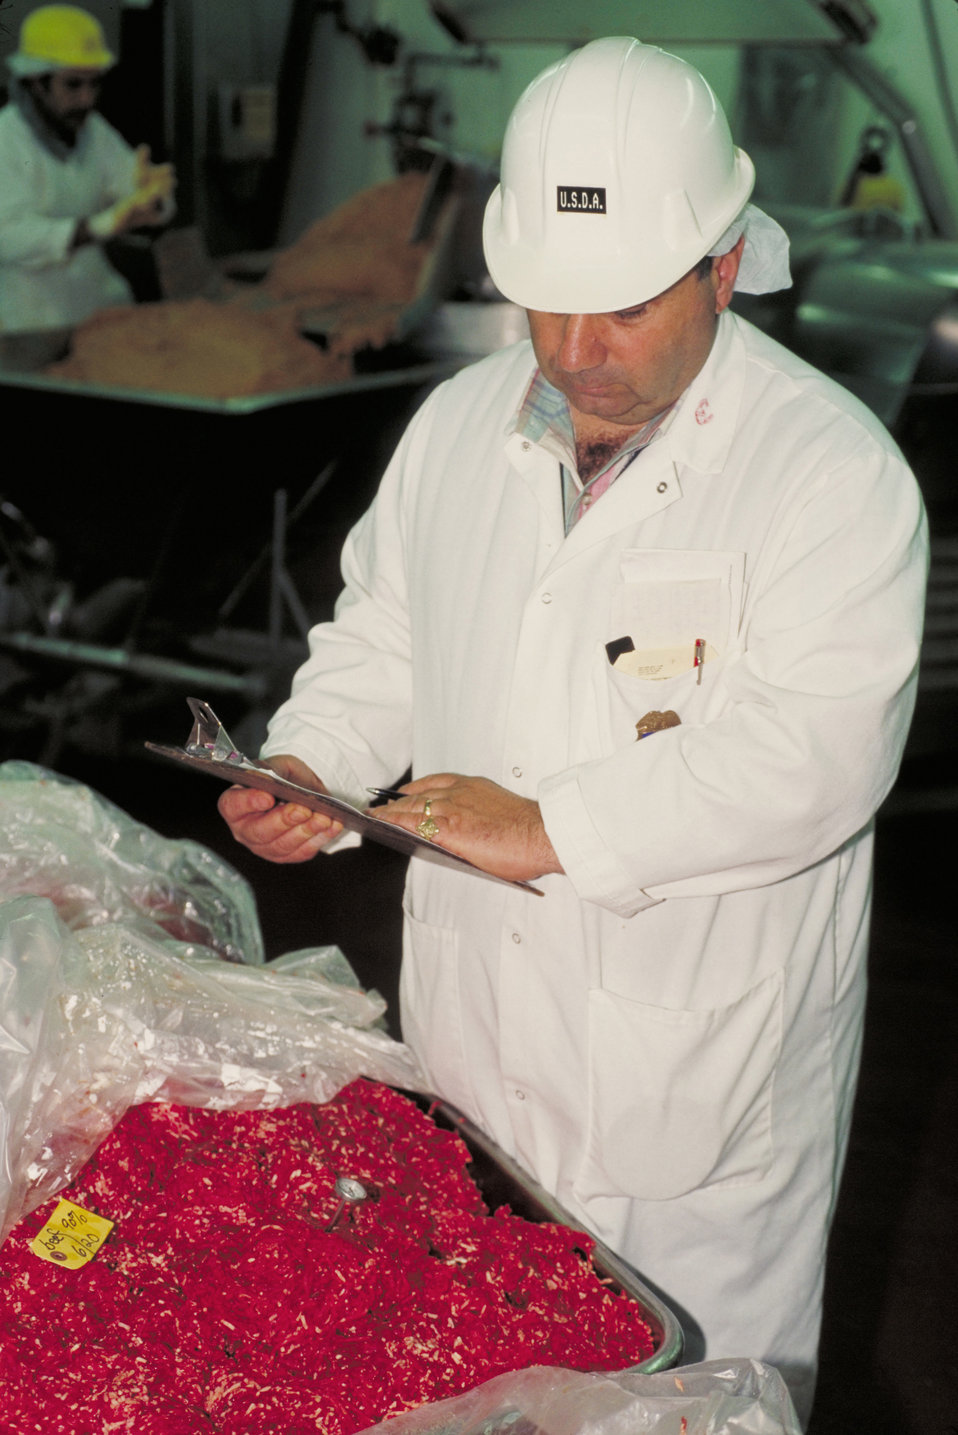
U.S. Department of Agriculture (USDA) Food Safety Inspection Service (FSIS) inspector checks the temperature of ground beef at various control points to compare them with those measured and recorded by the plant to prevent multiplication of pathogenic bacteria in compliance with Hazard Analysis and Critical Control Points (HACCP) issued by FSIS on June 15, 1995.